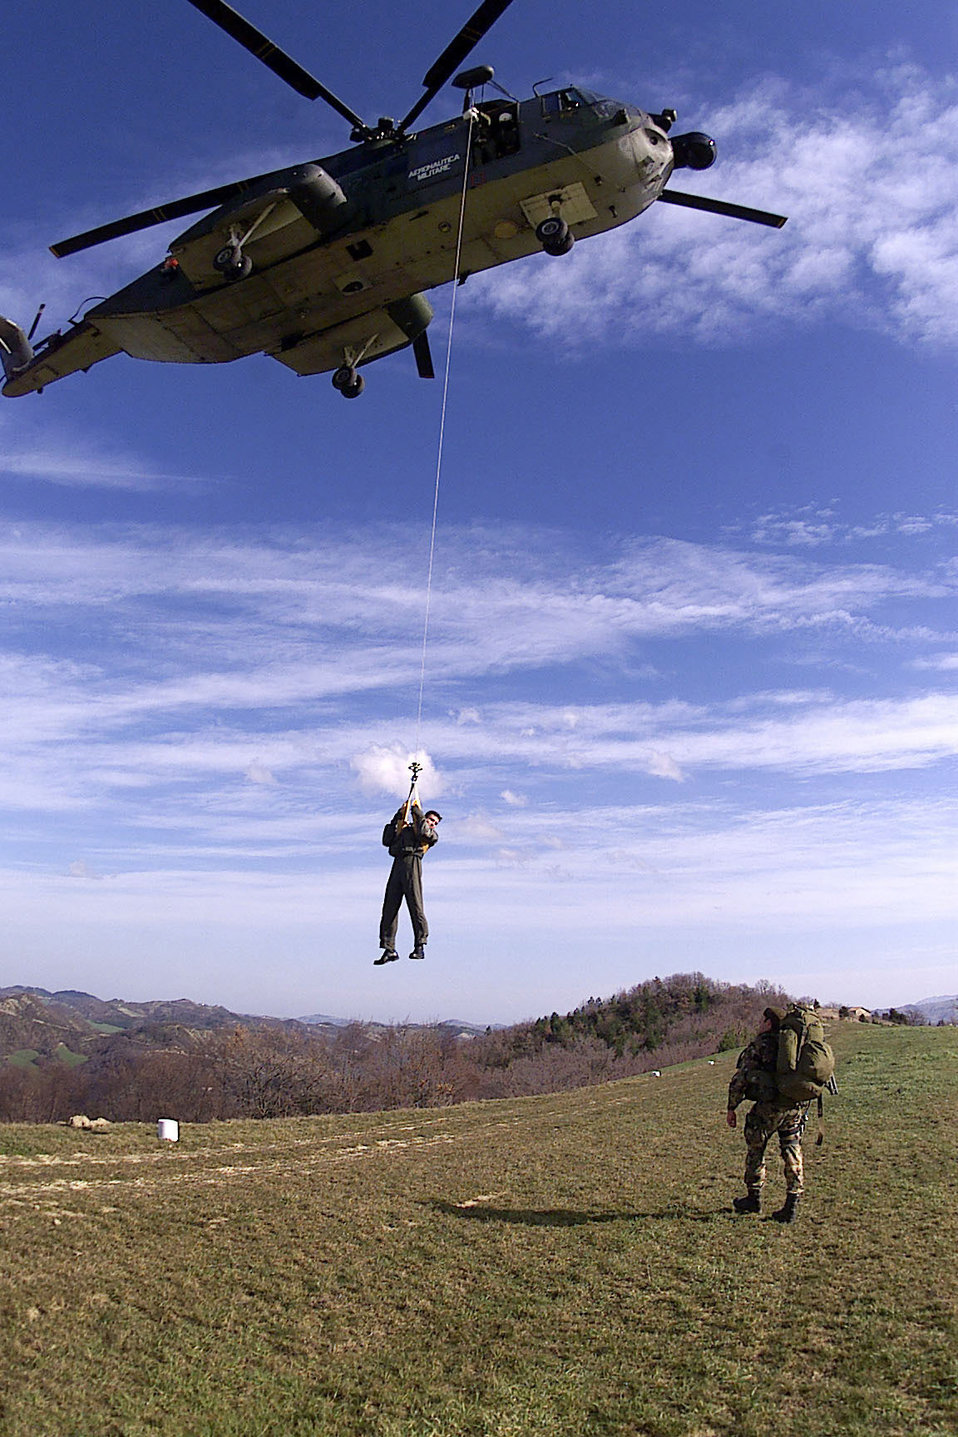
Hoist away

RIMINI, Italy -- 2nd Lt. Adam Cuquet, 510th Fighter Squadron, pilot candidate from Aviano Air Base, Italy, practices a hoist recovery maneuver during a joint NATO search and rescue exercise. The joint mission allows units to put into practice procedures that will maintain search and rescue proficiency.